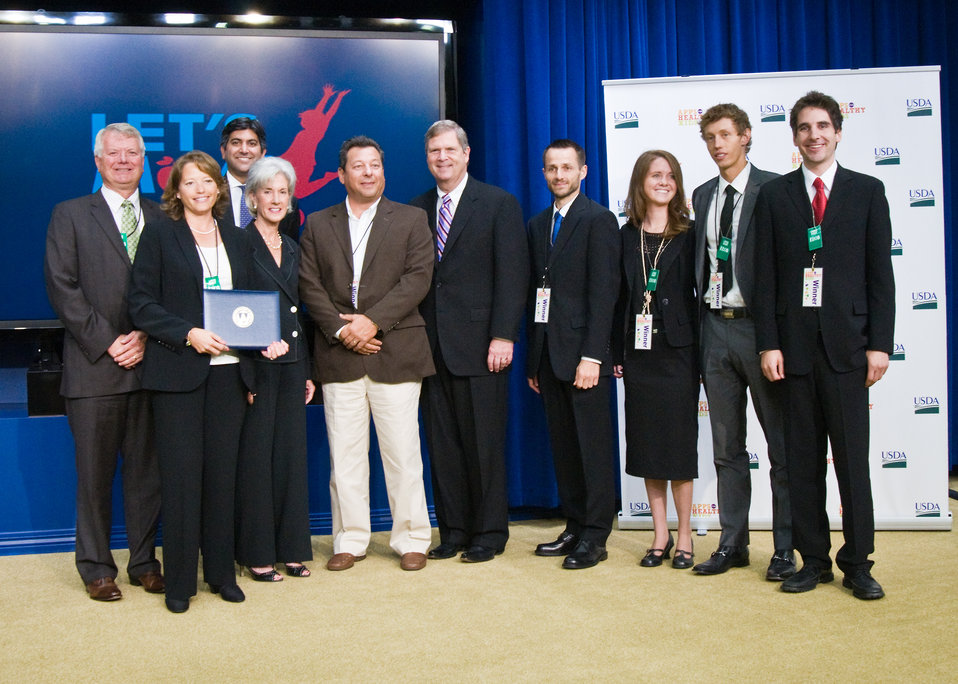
Aneesh Chopra, White House Chief Technology Officer, Health and Human Services Secretary Kathleen Sebelius and Agriculture Secretary Tom Vilsack present the First Prize to Karen Laszlo, Boulder, Colorado and the developers of the app 'Pick Chow!,' of The Apps for Healthy Kids competition at the White House, in Washington, DC, on Wednesday, September 29, 2010. The Apps for Healthy Kids competition is part of First Lady Michelle Obama’s Let’s Move campaign to end childhood obesity within a generation. The competition challenges software developers, game designers, students and other innovators to develop fun and engaging software tools and games to urge children, especially “tweens” (children ages 9-12) – directly or through their parents – to eat better and be more physically active. 'Pick Chow!,' allows children to create meals by dragging and dropping foods onto their virtual plate. The 'Add it Up!' meter shows the nutritional values in a fun and easy way and rates each meal with one to five stars - a feature that helps children learn quickly how their choices make a difference in creating a well-balanced meal. USDA Photo 10di1506-148 by Bob Nichols.